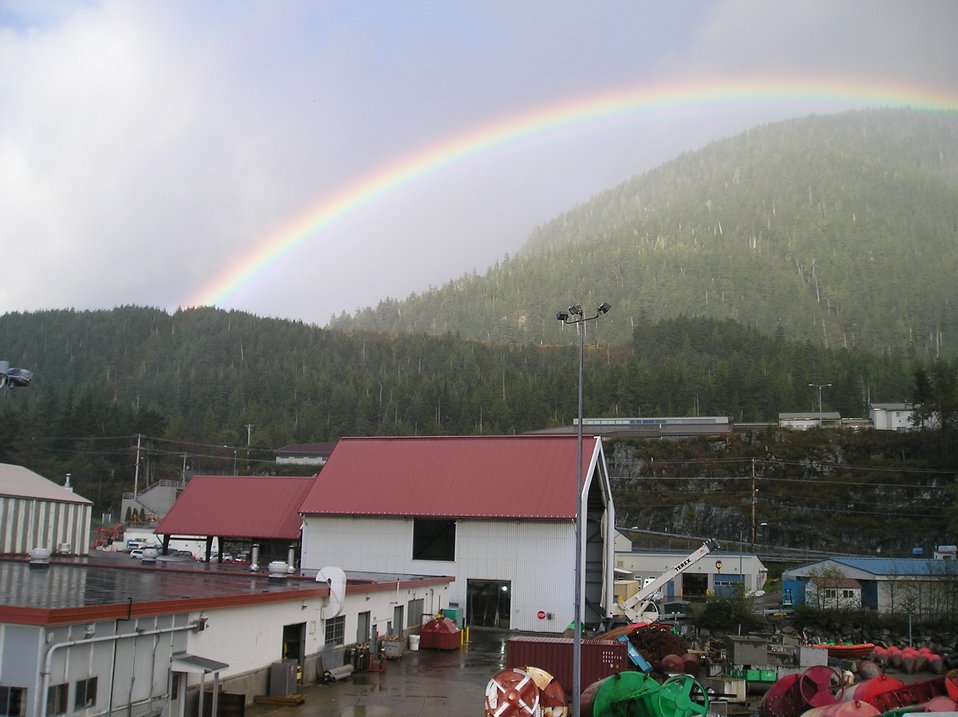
Rainbow and mist over the Coast Guard Base at Ketchikan.